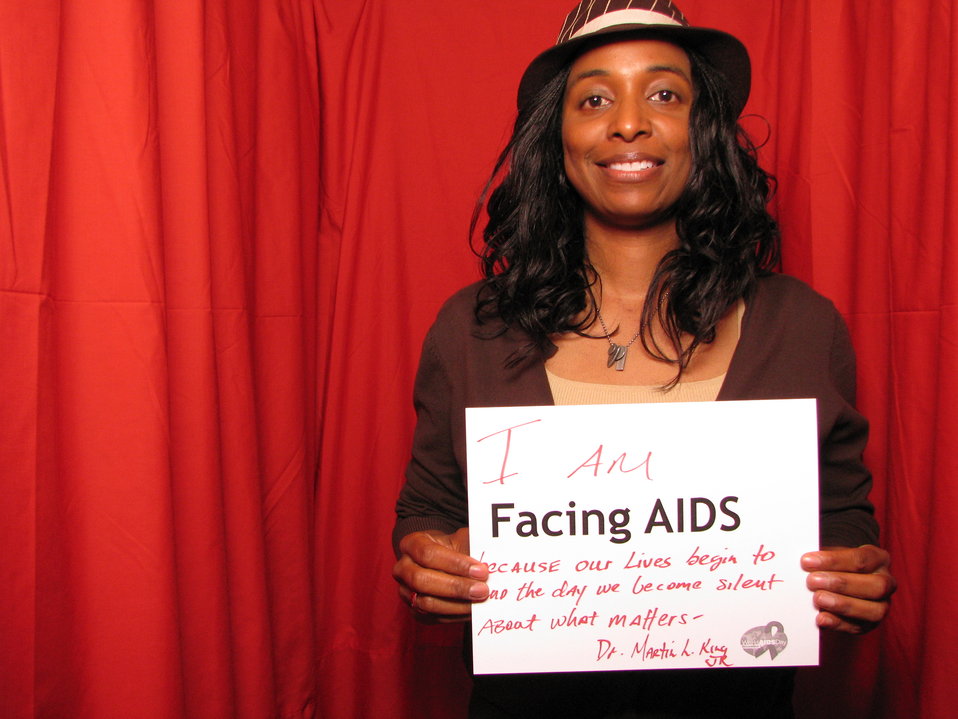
I AM FACING AIDS because our lives begin to end the day we become silent about what matters-- Dr. Martin L. King Jr.

From the AIDS.gov photo booth at the U.S. Conference on AIDS, September 2010 (Orlando, FL).